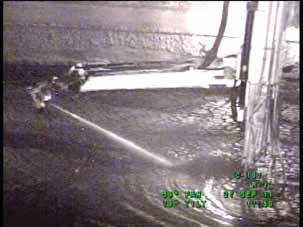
Retrievals in C-107 (October 2011)

The Mobile Arm Retrieval System, the largest robotic arm ever inserted into a Department of Energy waste storage tank, is at work at Hanford removing 253,000 gallons of waste from single-shell Tank C-107.

This large, robotic arm is capable of a wide range of telescoping motion and has multiple low and high-pressure heads that hydraulically “rake” waste to a central pump. The MARS incorporates three different technologies, making it capable of retrieving all of the various waste forms commonly found in Hanford’s waste tanks.

Prior to development of the MARS, each type of waste required a separate piece of equipment to remove, resulting in multiple tank entries, and installation and removal of multiple sets of infrastructure.